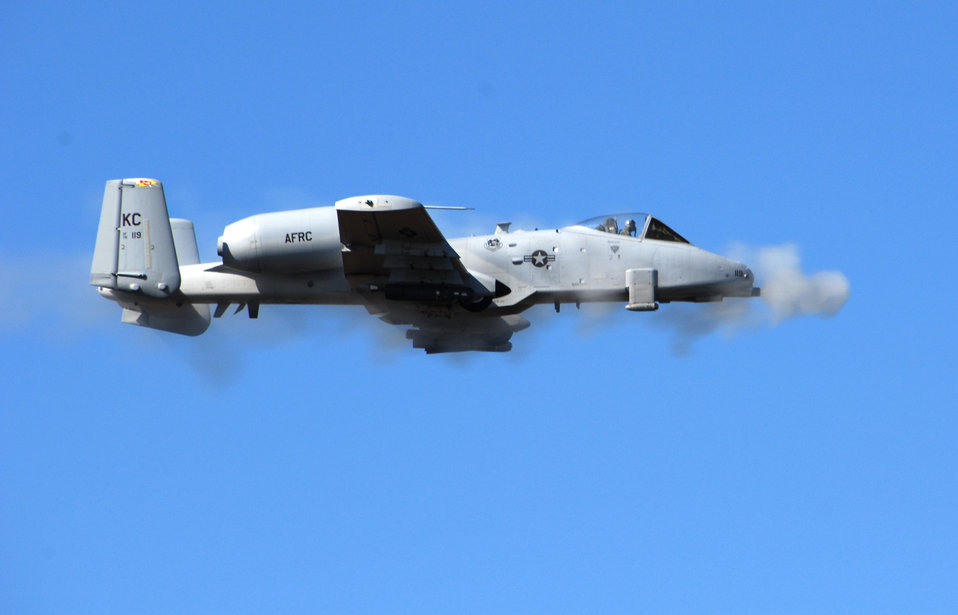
Hawgsmoke 2008 wraps up

A pilot in an A-10 Thunderbolt II from the 442nd Fighter Wing fires the plane's 30-mm cannon at a target on the Smoky Hill Range near Salina, Kan., Oct. 16 during the gunnery portion of the Hawgsmoke 2008 competition. Fourteen A-10 squadrons from throughout the Air Force participated in Hawgsmoke, with the Idaho Air National Guard's 190th Fighter Squadron taking honors as the top team.